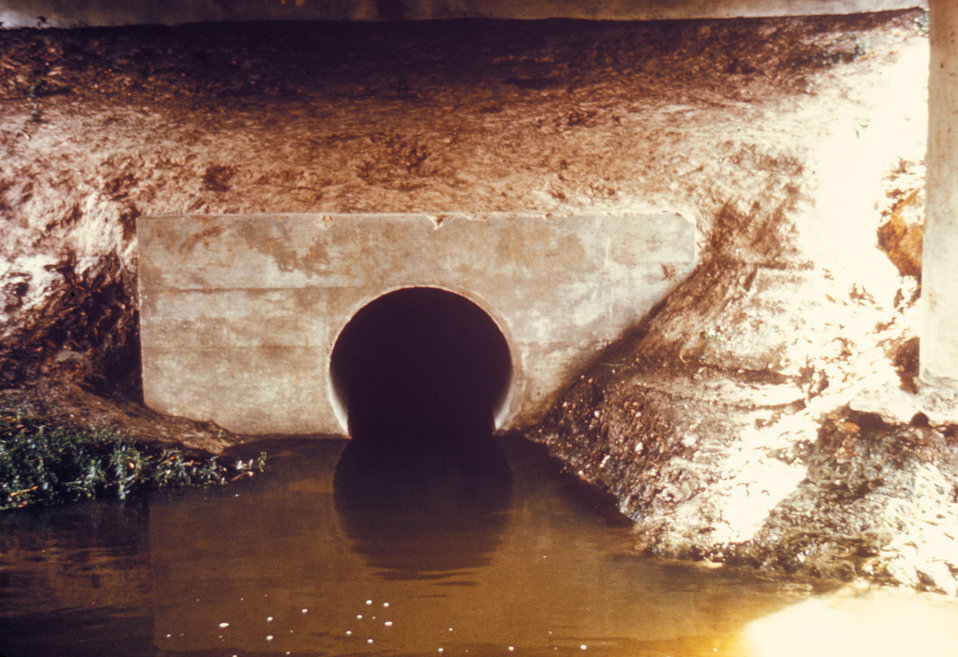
This photograph shows a culvert, which is an ideal spot that could support mosquito breeding.